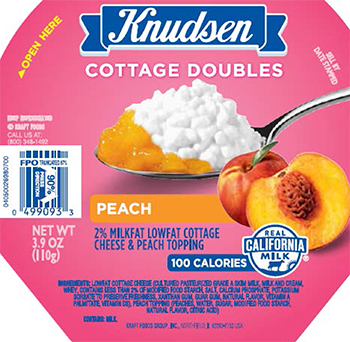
RECALLED – Cottage Cheese products

May 17, 2014 – Product Recall – Kraft Foods Group Voluntarily Recalls Select Cottage Cheese Products Due to Out-of-Standard Storage Temperatures
Certain Knudsen Cottage Cheese, Breakstone’s Cottage Cheese, Simply Kraft Cottage Cheese and Daily Chef Cottage Cheese Products Included in the Recall
.